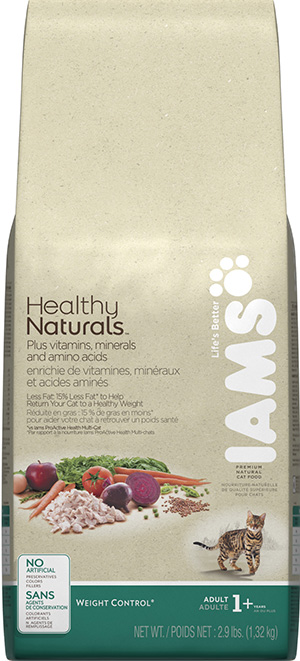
RECALLED – Dog and Cat foods - Dry

August 14, 2013 – Product Recall – P&G Voluntarily Recalls Limited Quantity of Dry Pet Food Due to Possible Health Risk.